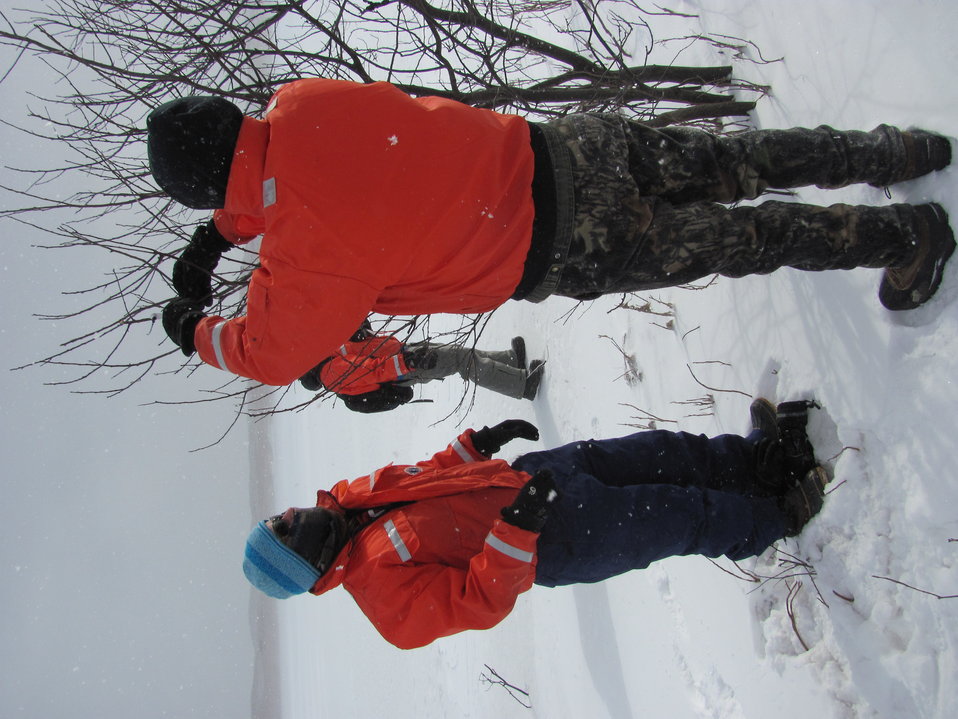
Placing Colony Tags

Two employees from North Prairie Wildlife Research Center (Jamestown, ND) put up nest tags for the heron and egret nest counts this summer at Chase Lake National Wildlife Refuge.